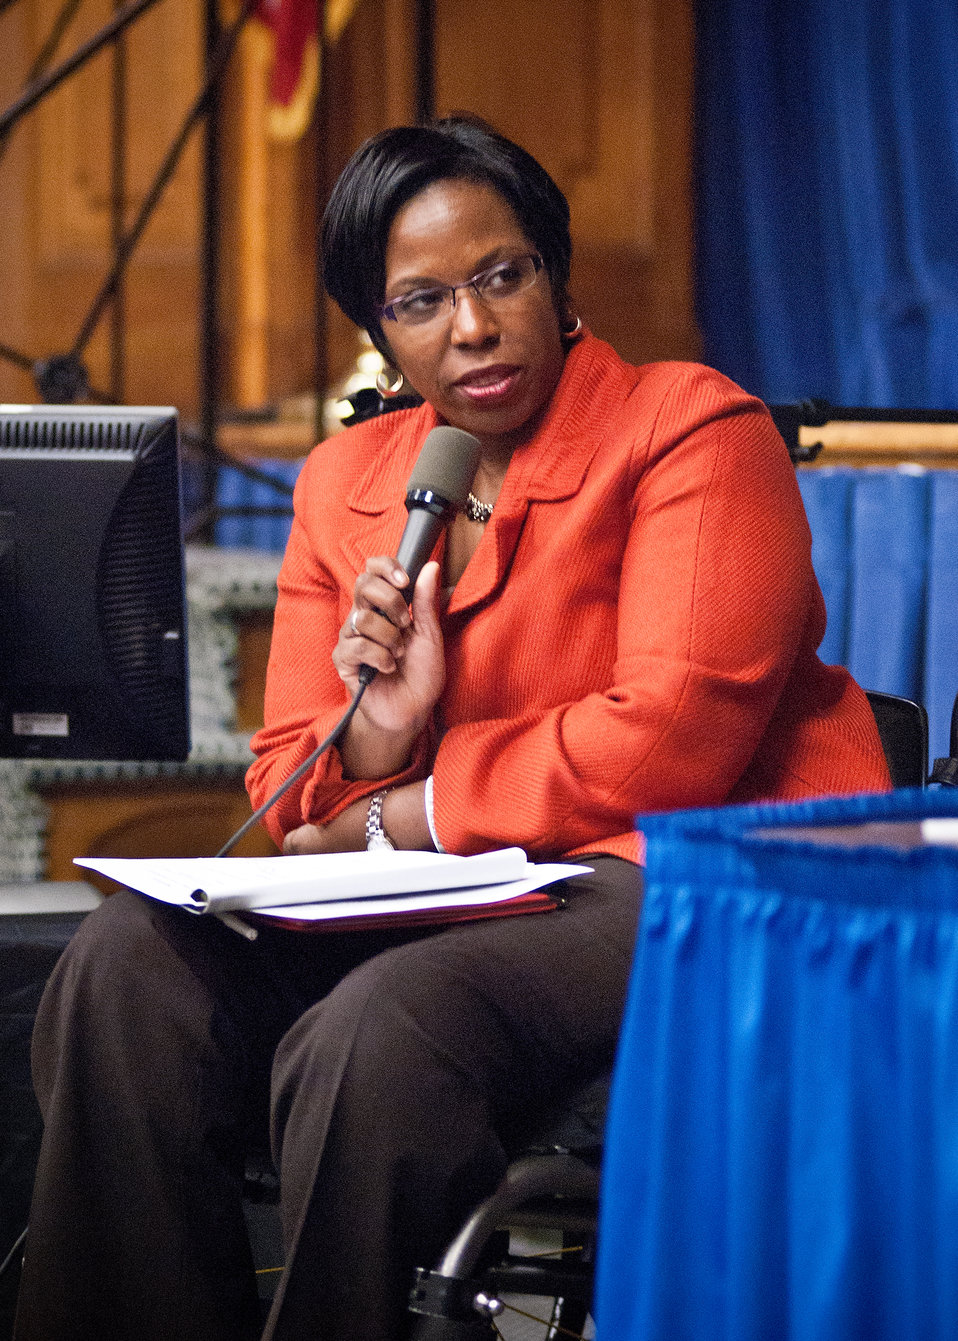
Carmen Jones, Senior Advisor, Departmental Management the moderator of the USDA Panel of Success: Hiring and Employing Individuals with Disabilities poses questions to panel members during the U.S. Department of Agriculture National Disability Employment Awareness Month event in Washington, DC, on Wednesday, October 5, 2011. Agriculture Secretary Tom Vilsack is dedicated to establishing the USDA as the lead Federal agency in employing individuals with disabilities. The theme for the event is “Profit by Investing in Workers with Disabilities.” USDA is committed to ensuring that all our programs are accessible and inclusive of individuals with disabilities.